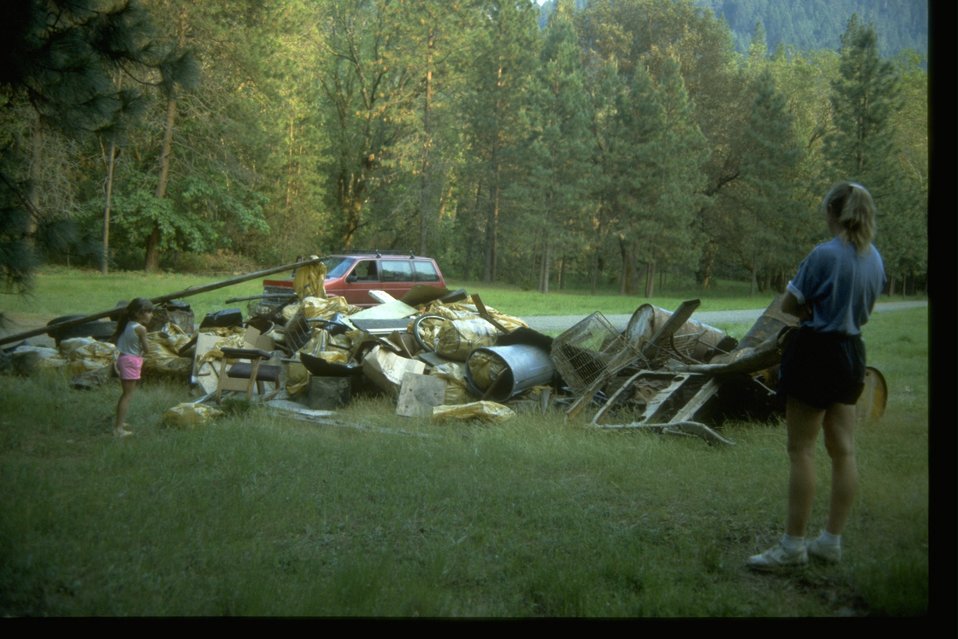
National River Cleanup Trash Pile